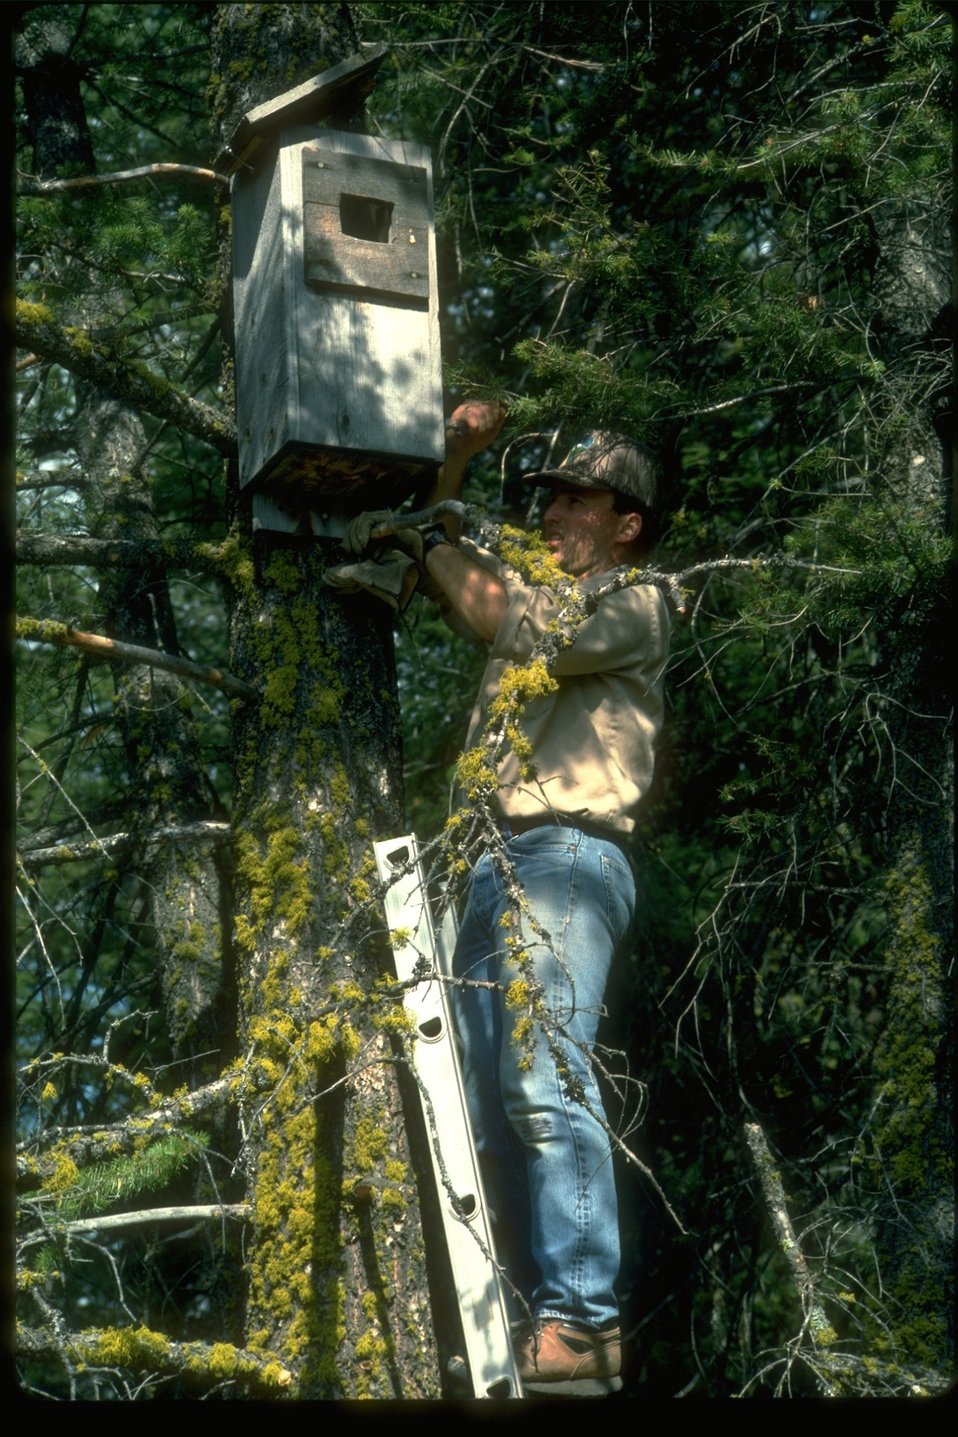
Wildlife biologist repairs a wood duck nest box near Bowers Lake, Washington